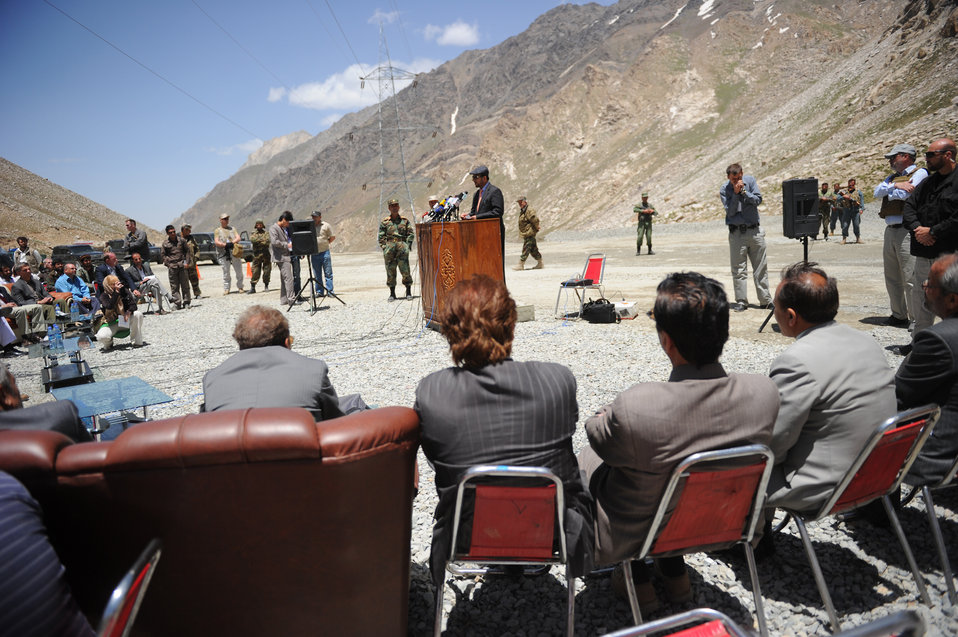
Parwan Governor Abdul Basir Salangi makes remarks during a ceremony to mark the beginning of renovations at the Salang Tunnel on the border of Parwan and Baghlan Provinces, Afghanistan, on Wednesday, June 15, 2011. (S.K.Vemmer/Department of State)